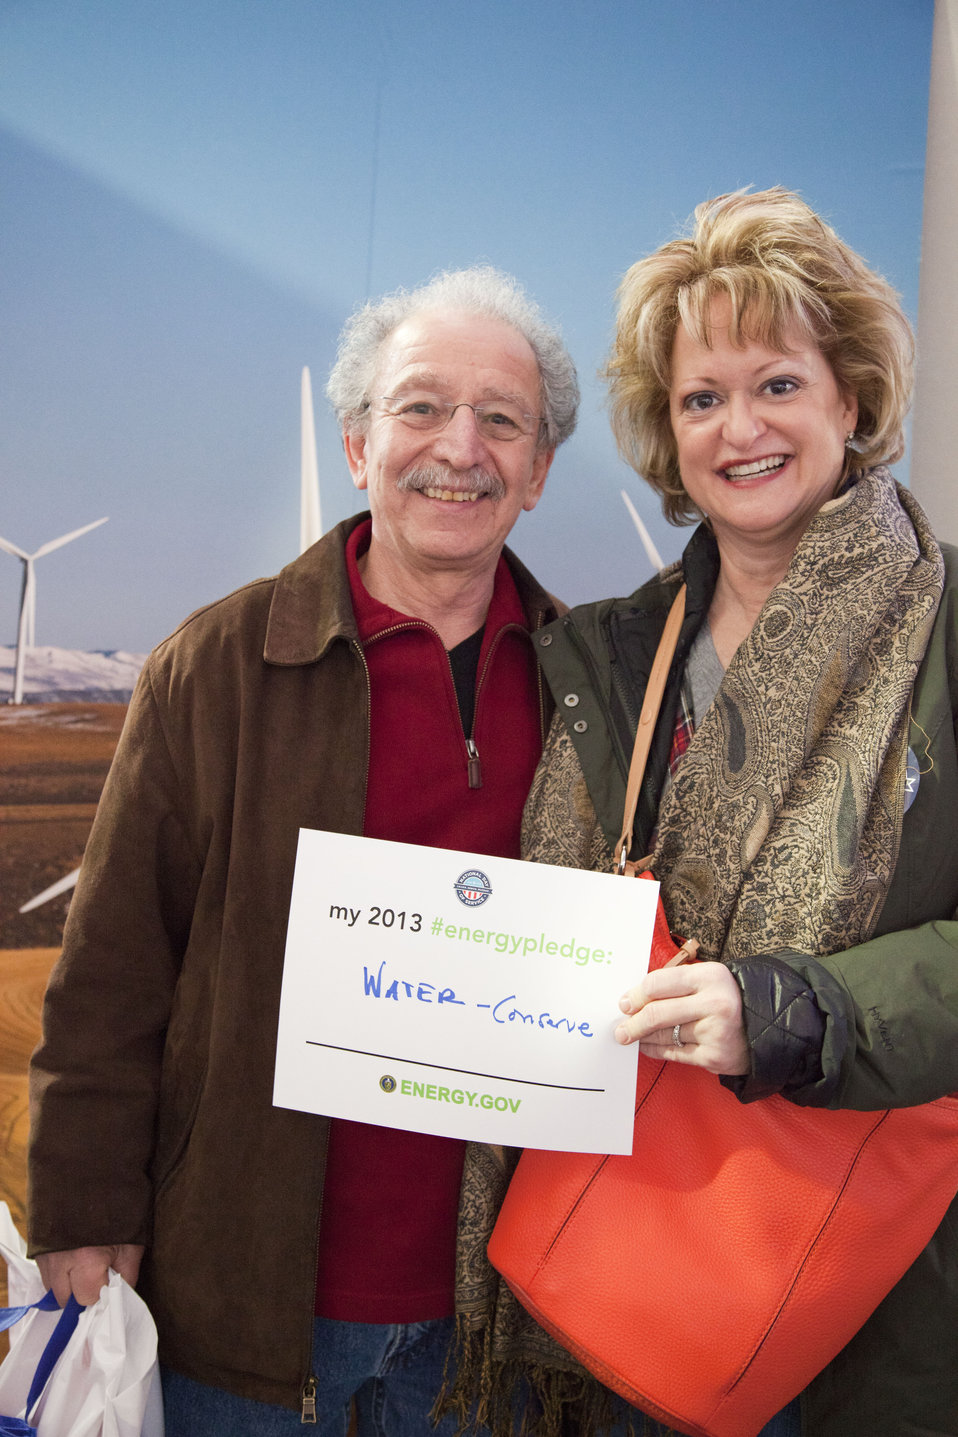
What's your #energypledge?